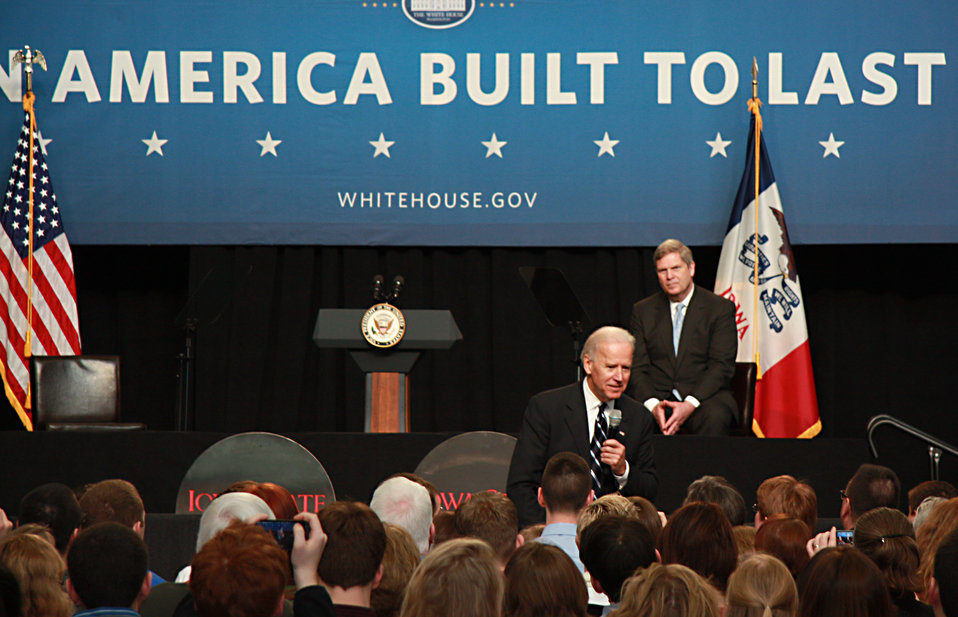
Agriculture Secretary Tom Vilsack and Vice President Joe Biden spoke to a large gathering of students and faculty about the important role manufacturing has in the future success of our country at An America Built to Last event at Iowa State University on Thursday, March 1, 2012 in Ames, IA.